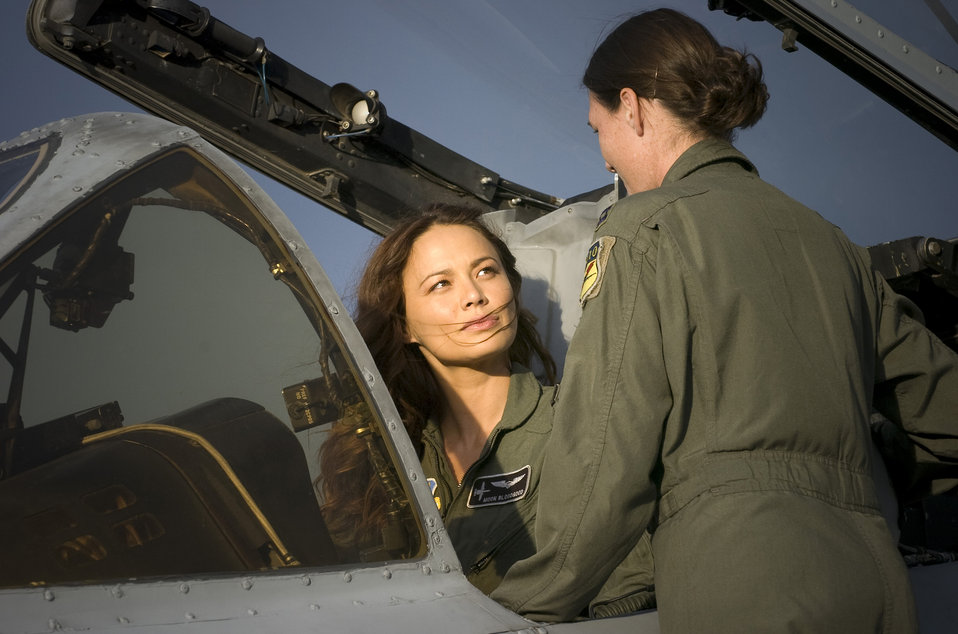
Airmen onboard Terminator Salvation

Capt. Jennie Schoeck and actress Moon Bloodgood met for an interview with the news media near an A-10 fighter, during the production of Terminator Salvation at Kirtland Air Force Base, NM on July 18, 2008. Capt. Schoeck is assigned to the 358 Fighter Squadron, Davis-Monthan Air Force Base, AZ was the A-10 fighter advisor for the production. Moon Bloodgood portrays a lead resistance pilot in the movie. The 358th Fighter Squadron is the Air Force's only active-duty A/OA-10A formal training unit the 358th FS conducts all formal course directed aircraft transition, day/night weapons and tactics employment, day/night air refueling, air combat and dissimilar air combat maneuver training for pilot initial qualification, requalification and instructor qualification in the A-10A for the Combat Air Forces.